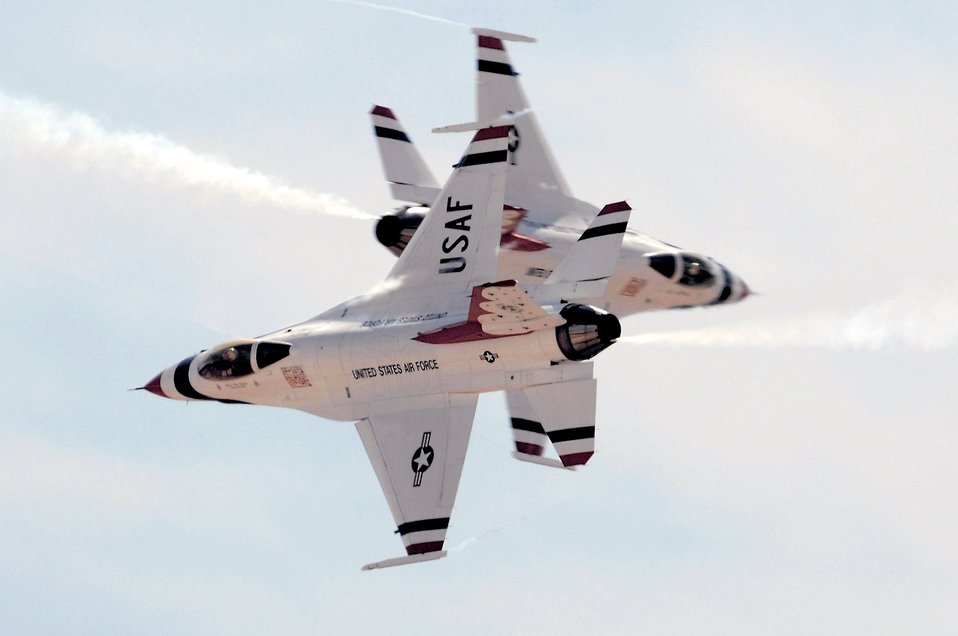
Thunderbirds begin 2008 season

The Air Force Thunderbirds solo pilots perform the crossover break maneuver during the March 11 acceptance show at Nellis Air Force Base, Nev. The acceptance show marks the beginning of the 2008 show season, which includes 37 showsites in the United States and Canada.